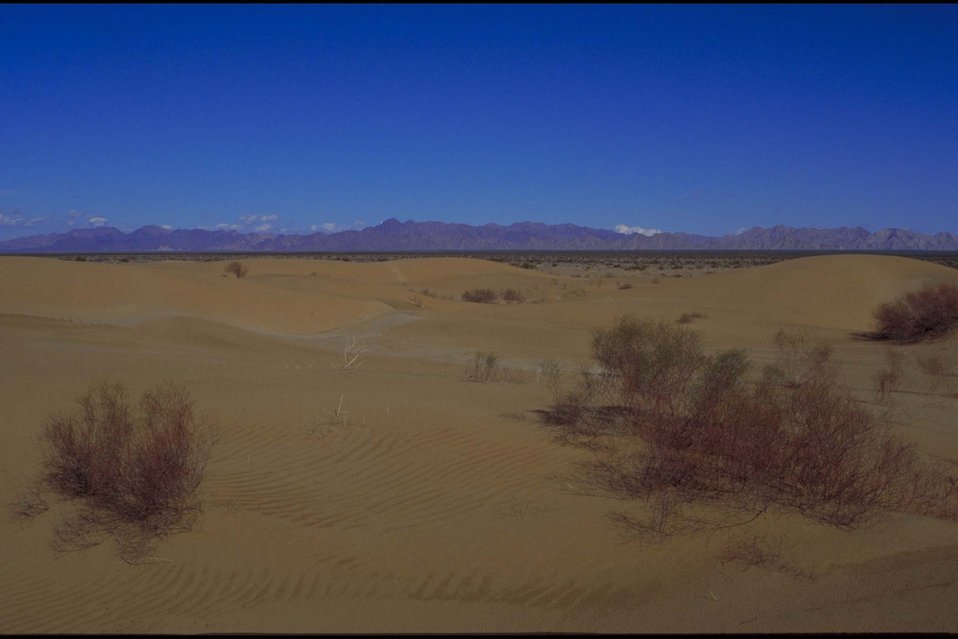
Beautiful sand dunes in the Arizona/California desert